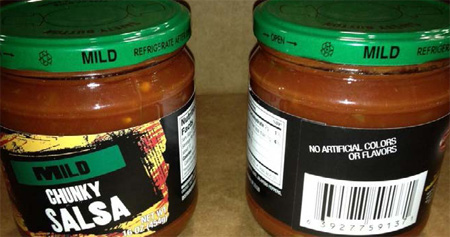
RECALLED – Salsa

July 22, 2013 – Product Recall – Olam Tomato Processors, Inc. Announces Voluntary Recall of Mild and Medium Chunky Salsa Because It May Contain Large Glass Pieces.